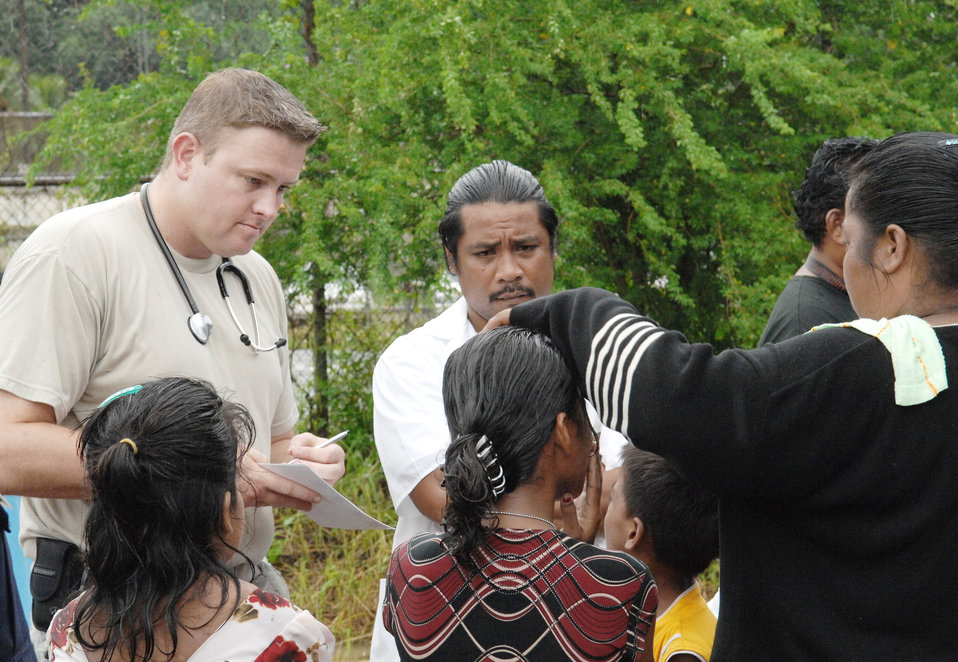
Air Force physician applies research to humanitarian exercise

Capt. (Dr.) Christopher Lindshield speaks to a patient during the humanitarian assistance rapid response team validation exercise Sept. 4, 2009, on Chuuk, in the Federated States of Micronesia. The team is the Air Force's new expeditionary medical capability designed to deploy within 24-hours of notice during disaster relief operations. The team provides basic medical care and public health assistance to 350 to 500 patients per day and is based at Andersen Air Force Base, Guam. Doctor Lindshield is from the 374th Medical Group at Yokota Air Base, Japan.